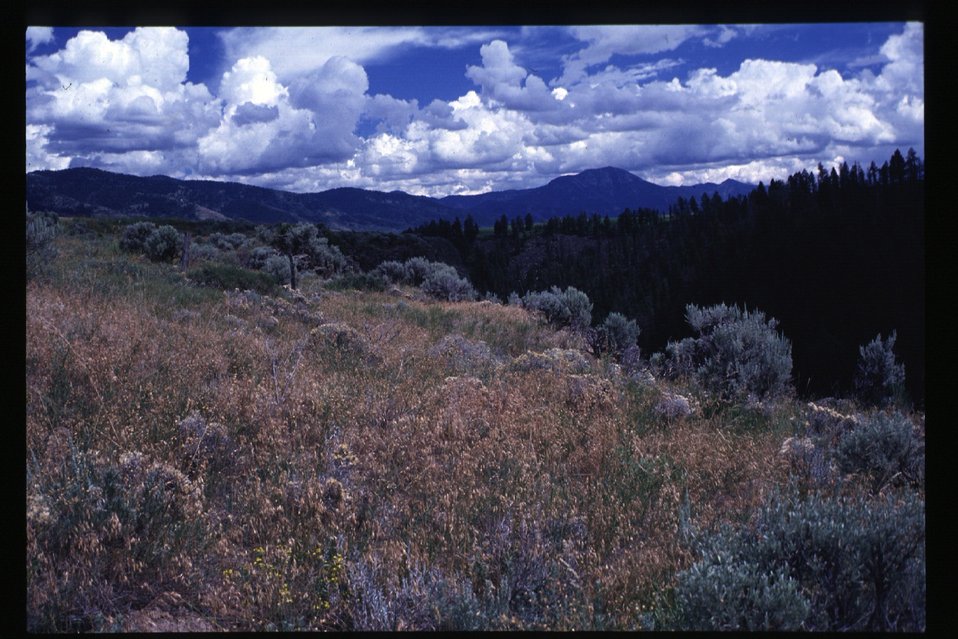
Scenic South Fork of Boise River Four Rivers Field Office LSRD Lower Snake River District